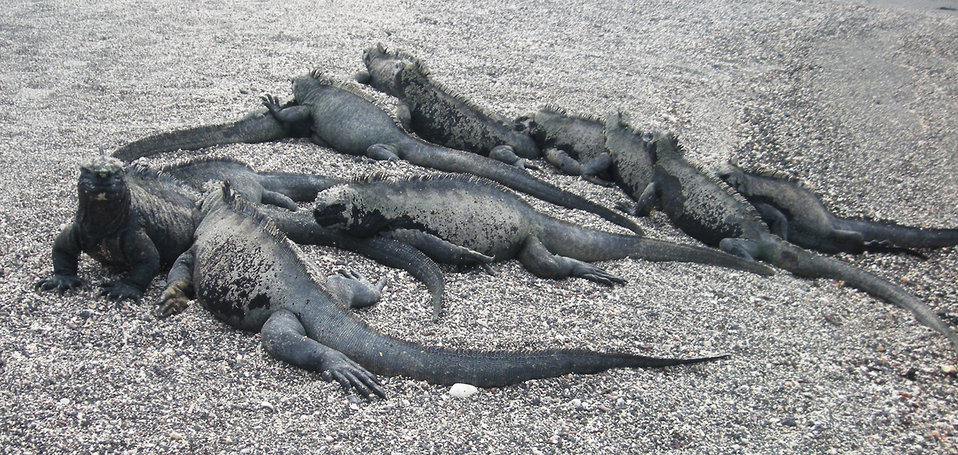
Marine iguanas on galapagos island, april 2011.